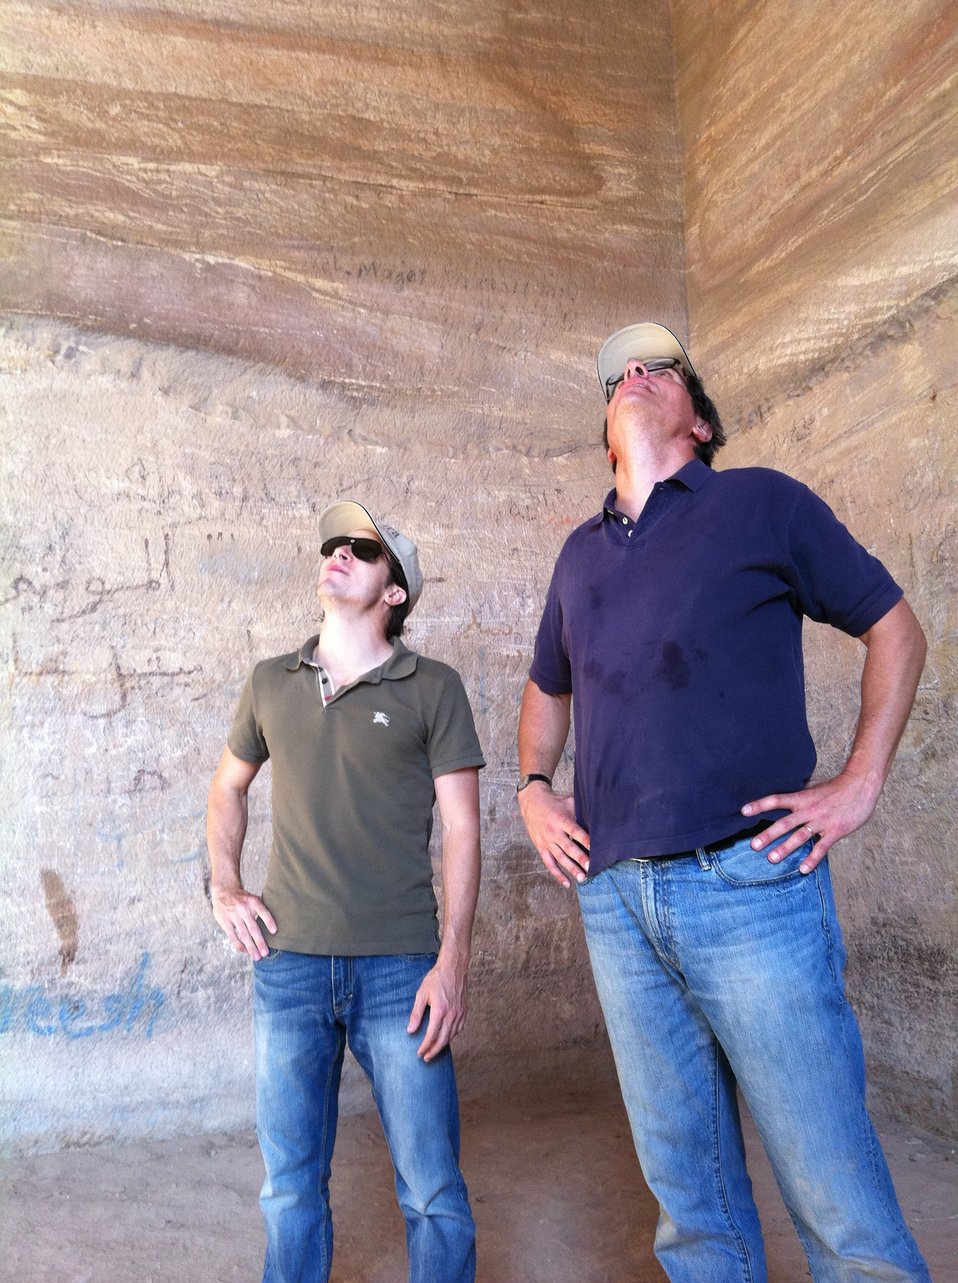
Assistant Secretary Fernandez Visits a USAID-Funded Archeological Site

Assistant Secretary of State for Economic, Energy and Business Affairs Jose Fernandez visits a USAID-funded archeological site in Petra, Jordan, on October 24, 2011.